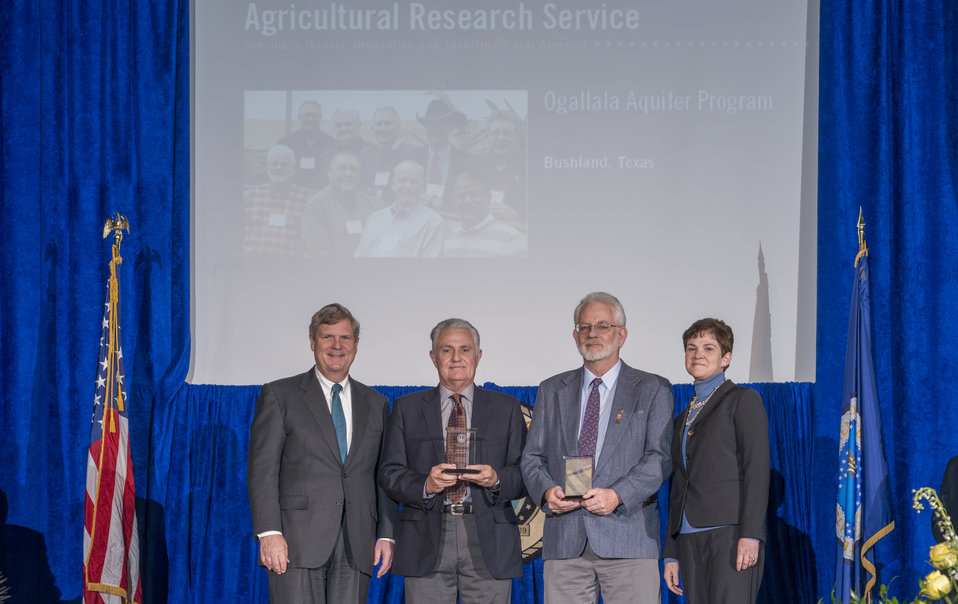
Agriculture Secretary Tom Vilsack and Deputy Agriculture Secretary Krysta Harden present the Secretary’s Honor Award to the Agricultural Research Service (ARS) Ogallala Aquifer Program, in Bushland, TX Team leaders Robert Lascano and Steve Evett at the 2013 Secretary's Honor Awards in the Jefferson Auditorium at the U.S. Department of Agriculture (USDA) in Washington, D.C. on Wednesday, Dec. 11, 2013.